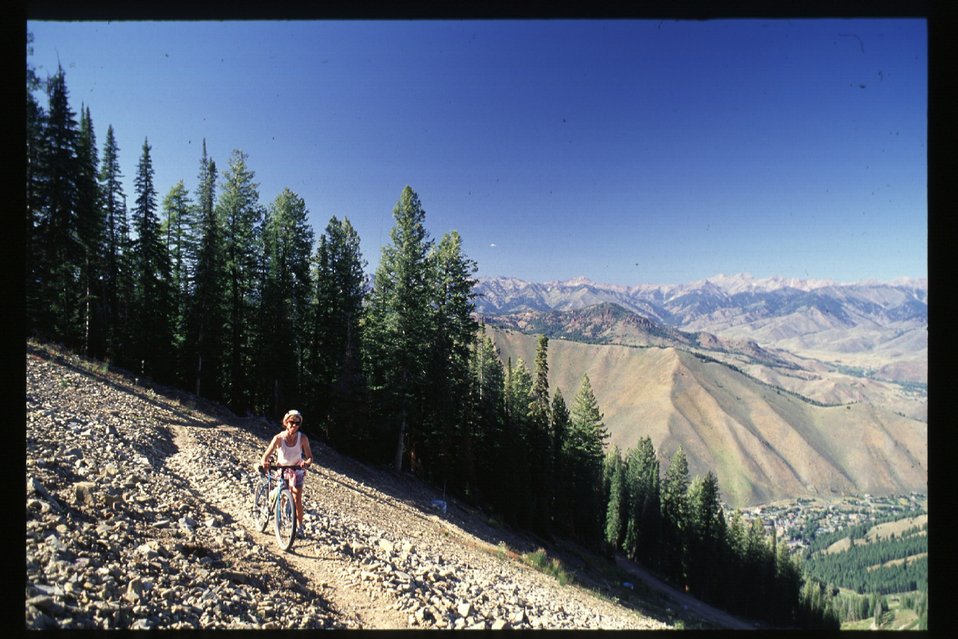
Bald Moutain Trail Sun Valley Recreation Scenic Biker Shoshone Field Office USRD Upper Snake River District